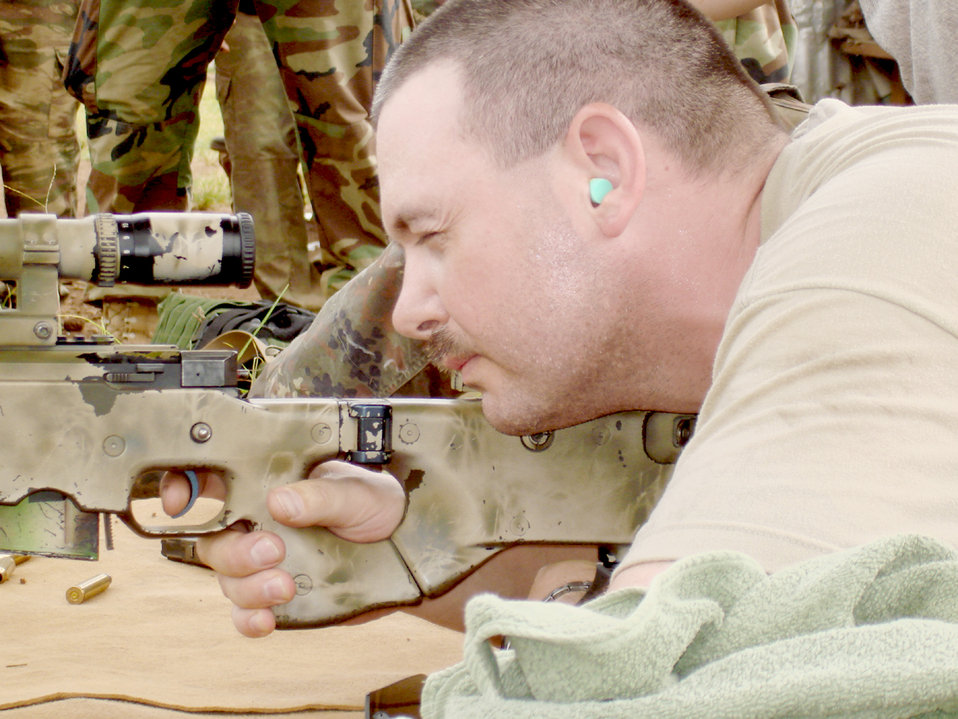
Airmen return from Africa Partnership Station 2009 support

Tech. Sgt. James Gregg fires a rifle during joint service weapons training with the U.S. Navy SEALs and Cameroonian forces as part of African Partnership Station 2009 Sept. 29, 2009, in West Central Africa. Sergeant Gregg is a communication computer system operator with the 21st Air Mobility Operations Squadron.